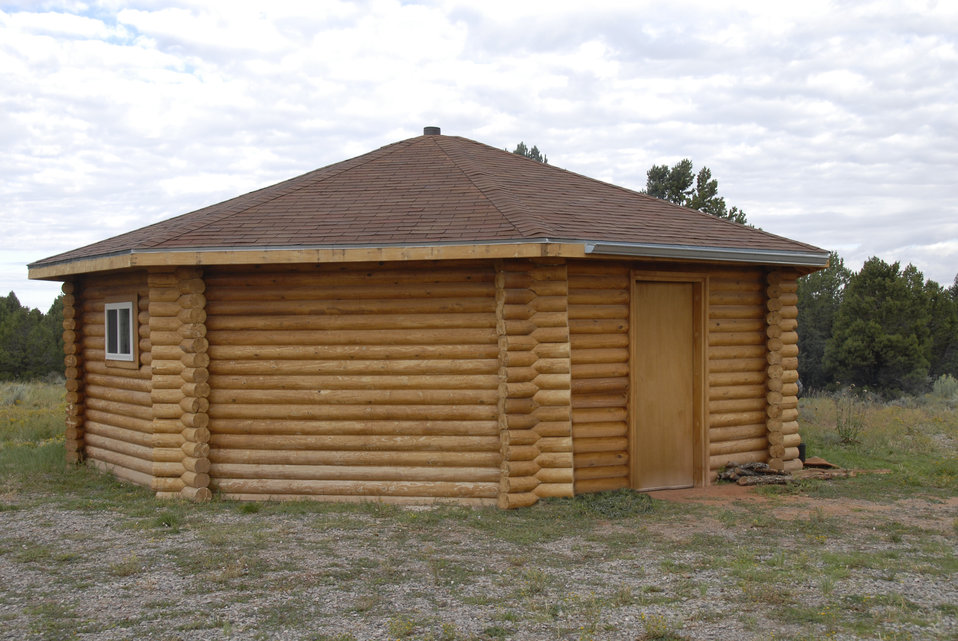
A Navaho Hogan sits on the grounds of a National Indian Community College and Land Grant Institution Diné College in Tsaile, Arizona on September 11, 2008. A Hogan can be round, hexagonal, octagonal, or cone shaped with the door facing east to welcome the rising sun, or for good wealth and fortune and are made of wood and packed mud and earth. The Hogan is considered sacred to those who practice the Navajo religious way of life. The religious song 'The Blessingway'; describes the first Hogan as being built by coyote with help from beavers to be a house for First Man, First Woman, and Talking God. Diné College established in 1968 serves the residents of the 26,000 square-mile Navajo Nation and is the first of 37 tribal colleges.